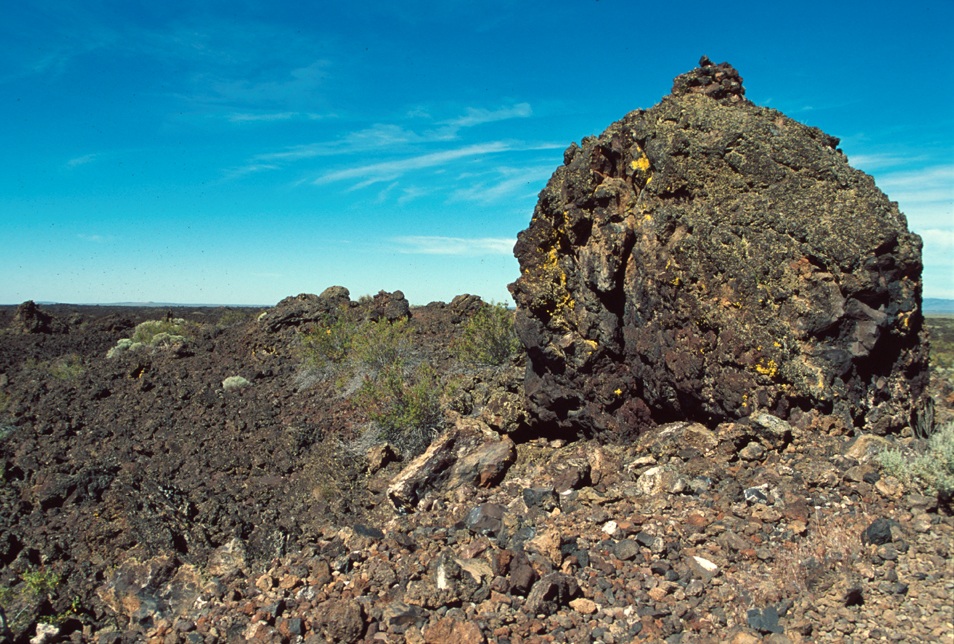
Craters of the Moon National Monument Shoshone Field Office USRD Upper Snake River District